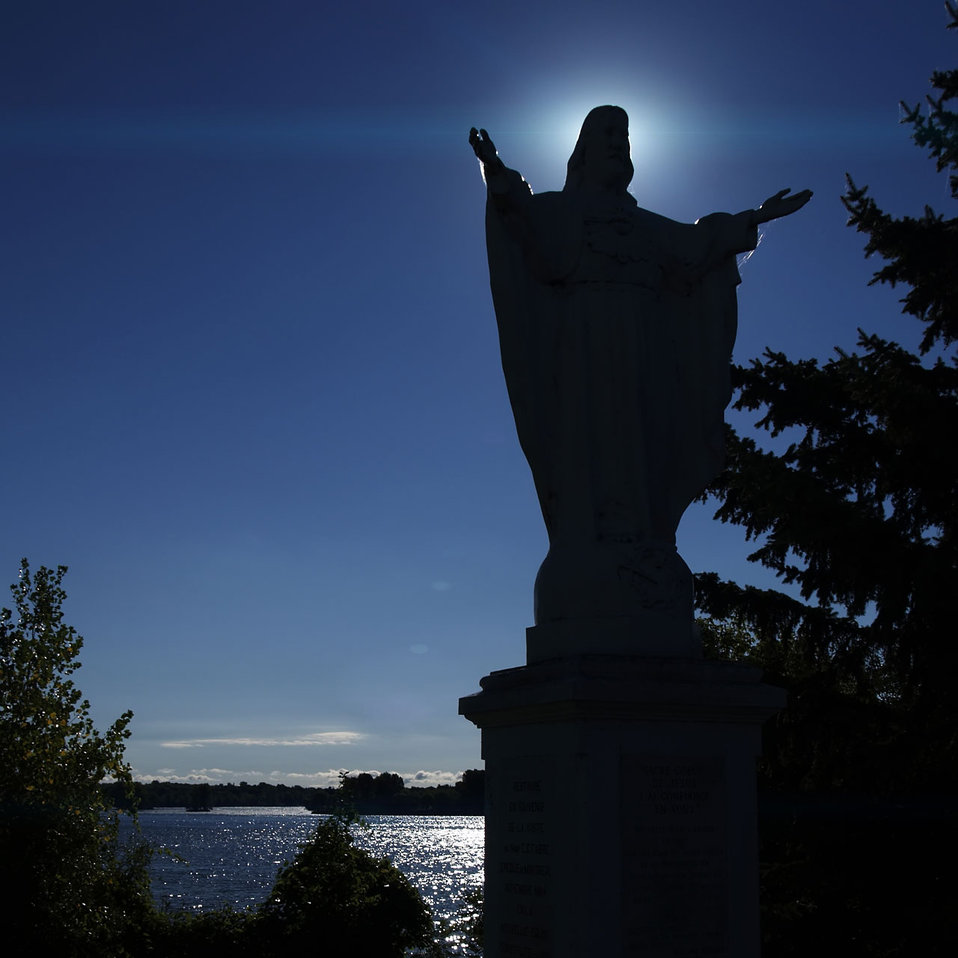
Statue

Stone statue.